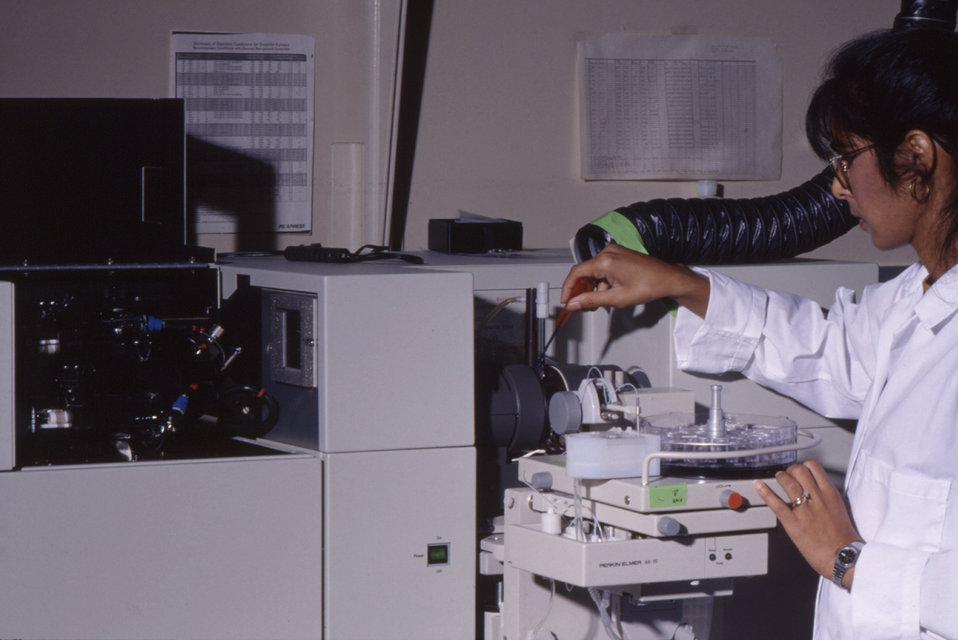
This CDC laboratory tech is working with an early model PerkinElmer Atomic Absorption spectroscopy device.